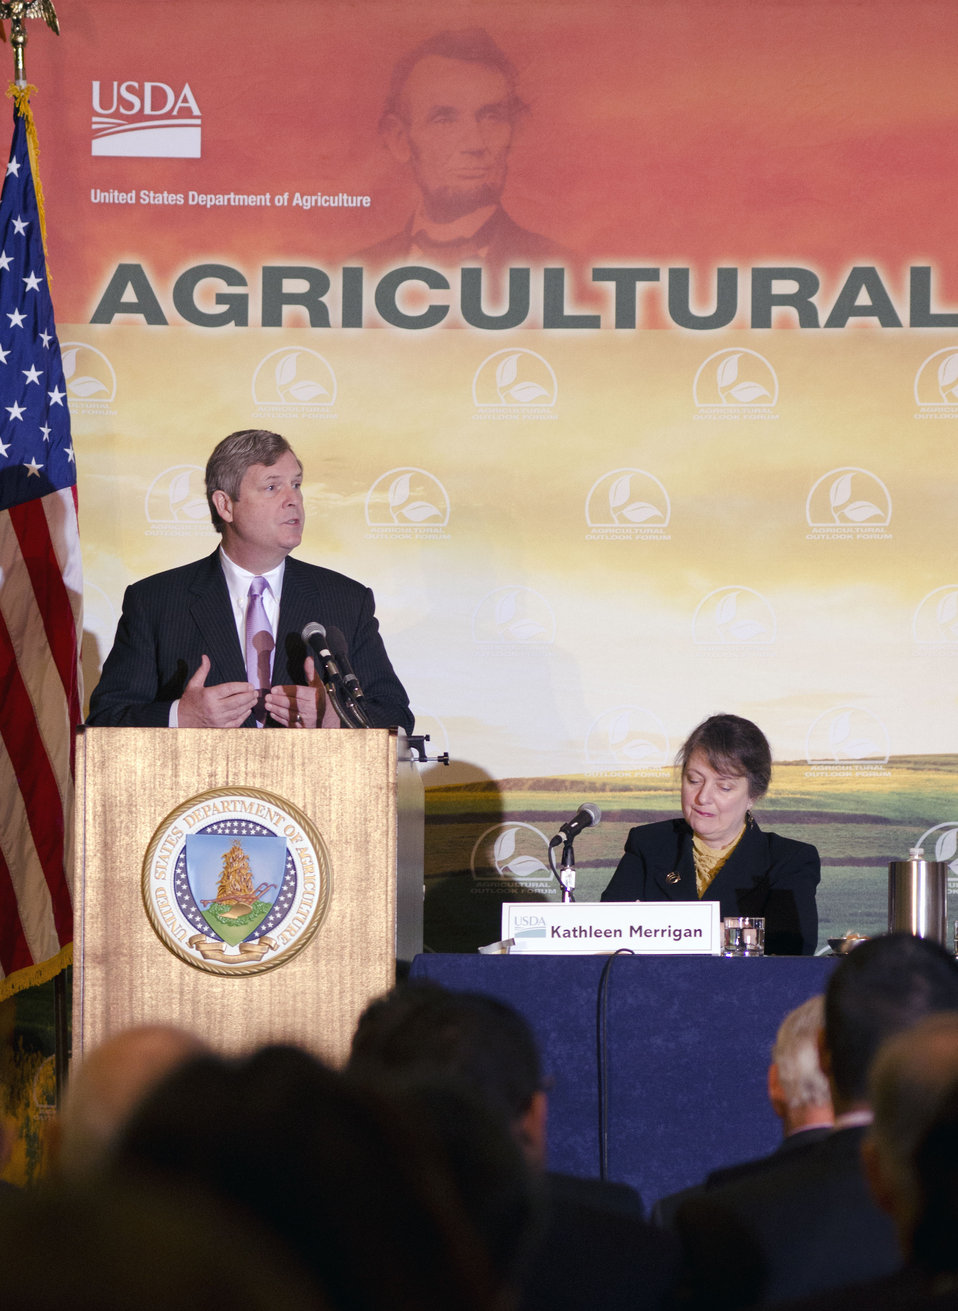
Agriculture Secretary Tom Vilsack presents the Keynote address at the Opening session of the 2013 Agriculture Outlook Forum, in Arlington, VA, on Thursday, February 21, 2013. Agriculture Deputy Secretary Kathleen Merrigan takes notes.